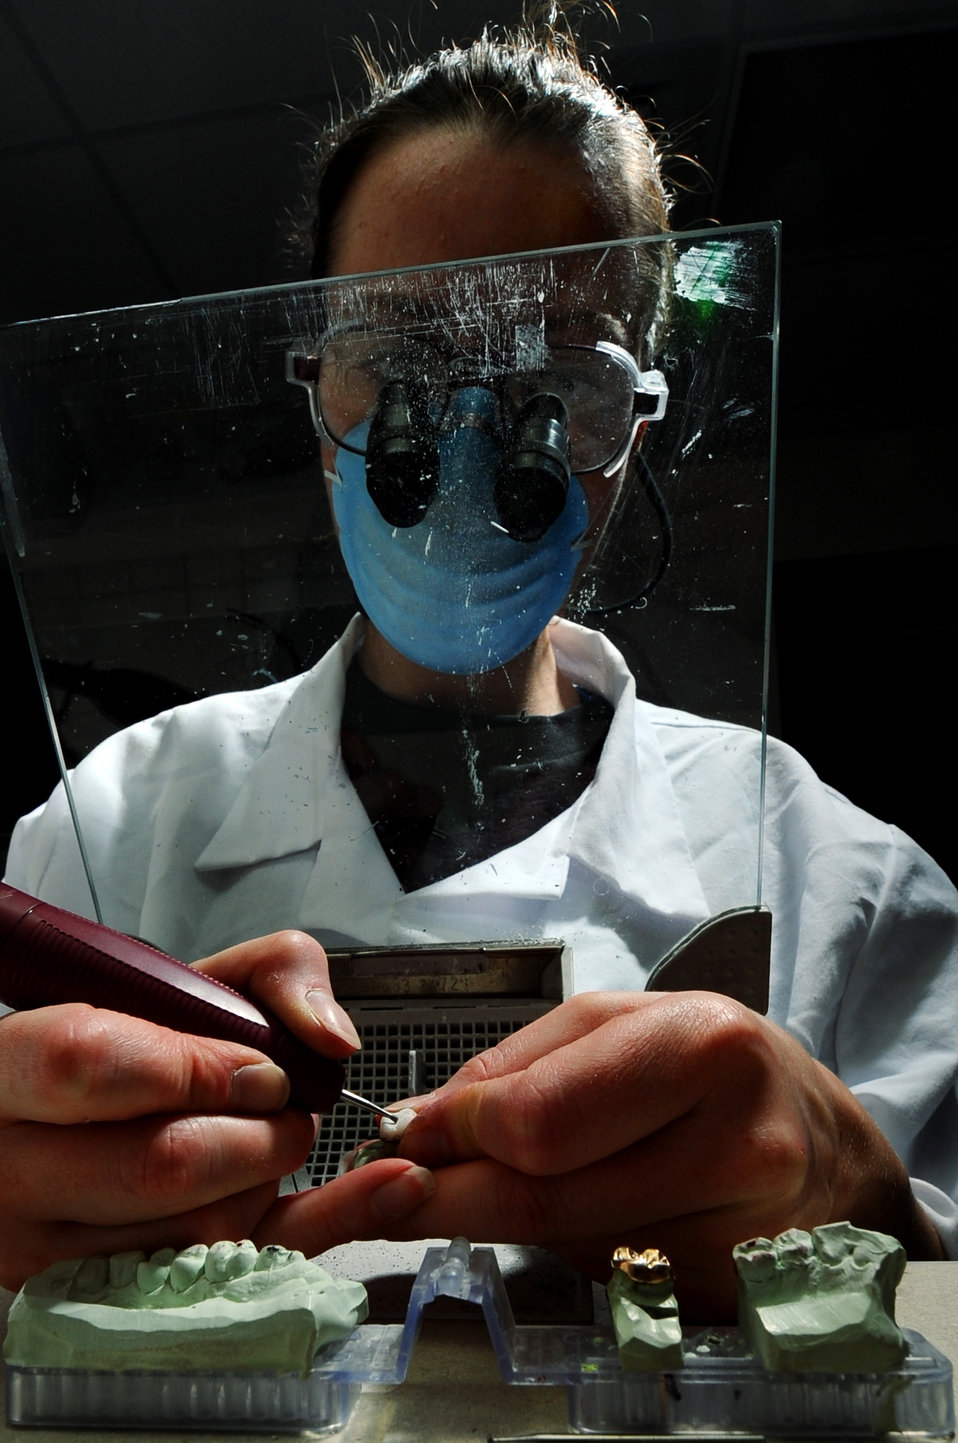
Crown me

Staff Sgt. Amy Cadavero looks through magnifying goggles as she shapes a porcelain crown using a dental drill with a diamond bur drill bit Sept. 9 at Eielson Air Force Base, Alaska. Once Sergeant Cadavero receives the impressions made from a patient's teeth, she will then make it into a cast mold to start shaping the crown so it will fit comfortably in a patient's mouth. This process can take up to a week to finish. She is a dental lab technician assigned to the 354th Medical Operations Squadron